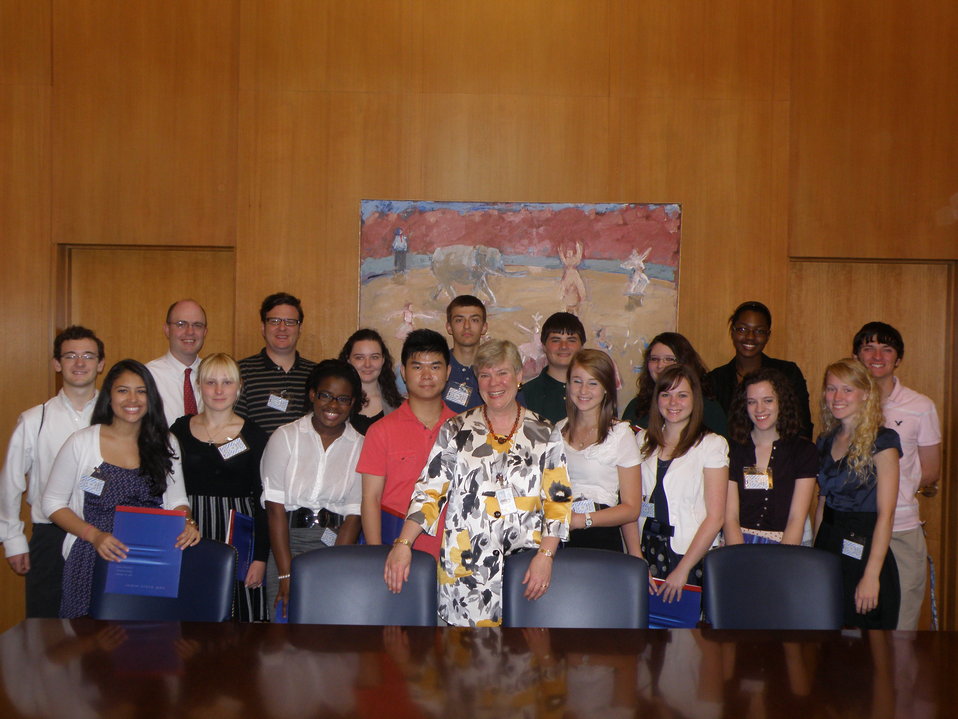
Assistant Secretary Gottemoeller Speaks to St. John's Catholic High School Students

Assistant Secretary of State for the Bureau of Arms Control, Verification and Compliance Rose Gottemoeller speaks to students from St. John's Catholic High School in Frederick, Maryland, at the U.S. Department of State in Washington, D.C., on May 24, 2011.